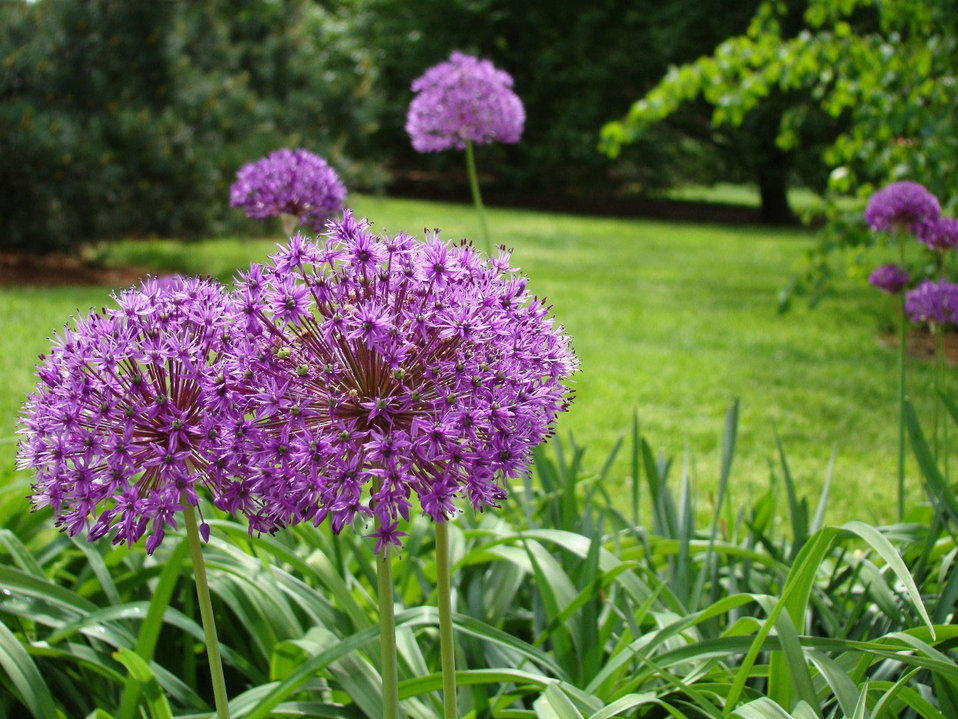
Spring

Picturesque countryside.